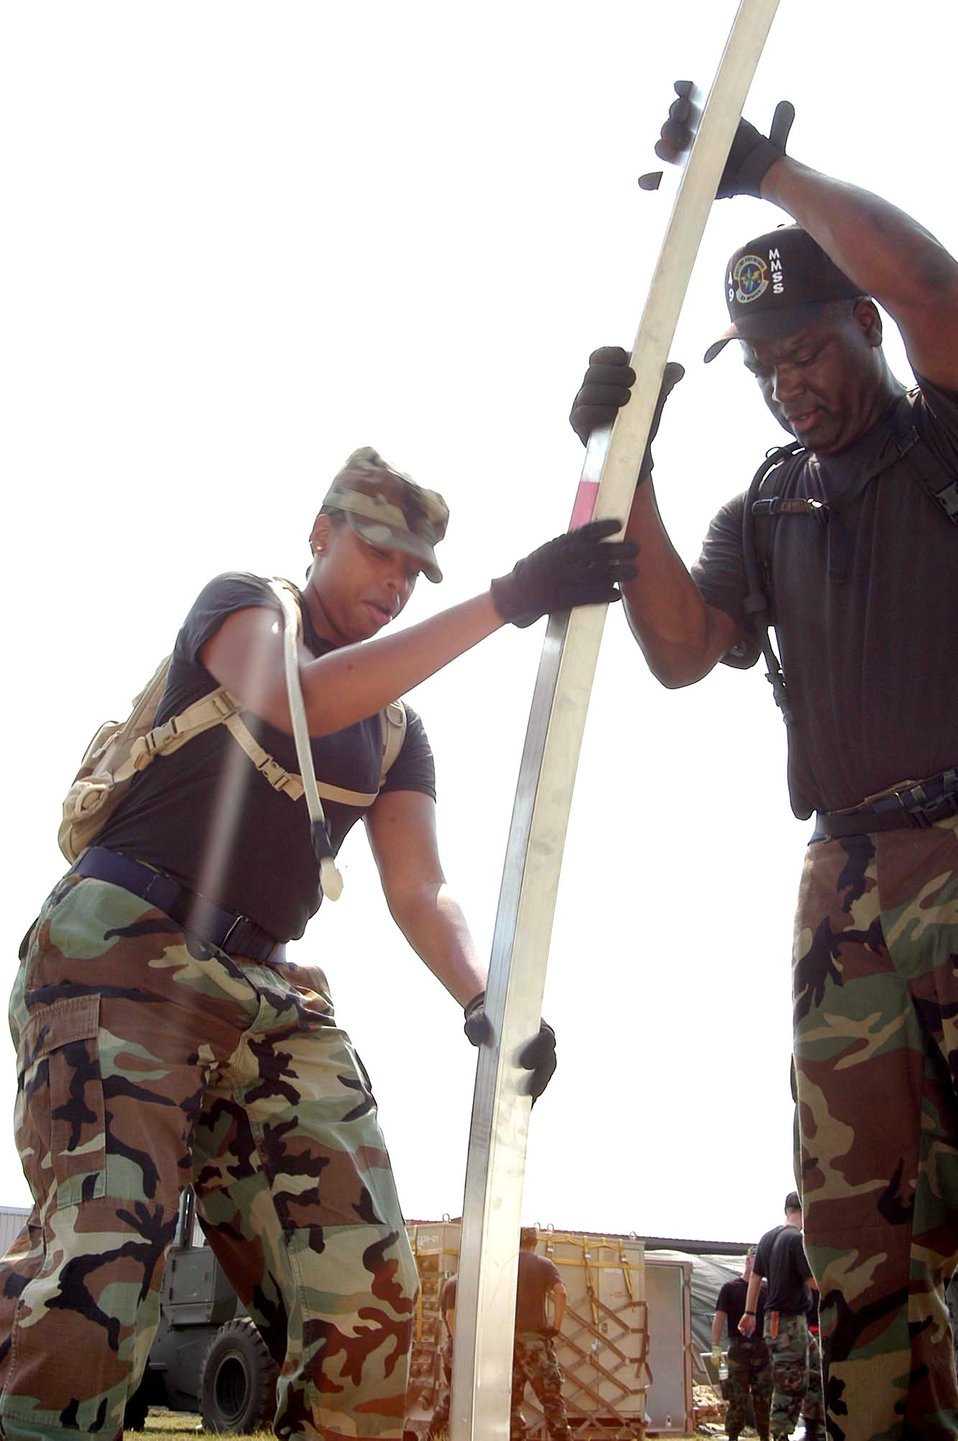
Hurricane relief

LOUIS ARMSTRONG NEW ORLEANS INTERNATIONAL AIRPORT, La. -- Staff Sgt. Cecily McCurvey (left) and Master Sgt. Tony Wells erect an Alaskan shelter here Sept. 5. Airmen with the 49th Materiel Maintenance Support Squadron from Holloman Air Force Base, N.M., arrived here Sept. 4 to begin construction on more than 30 shelters being built to support additional Airmen coming here in support of Hurricane Katrina relief and rebuilding efforts in New Orleans.